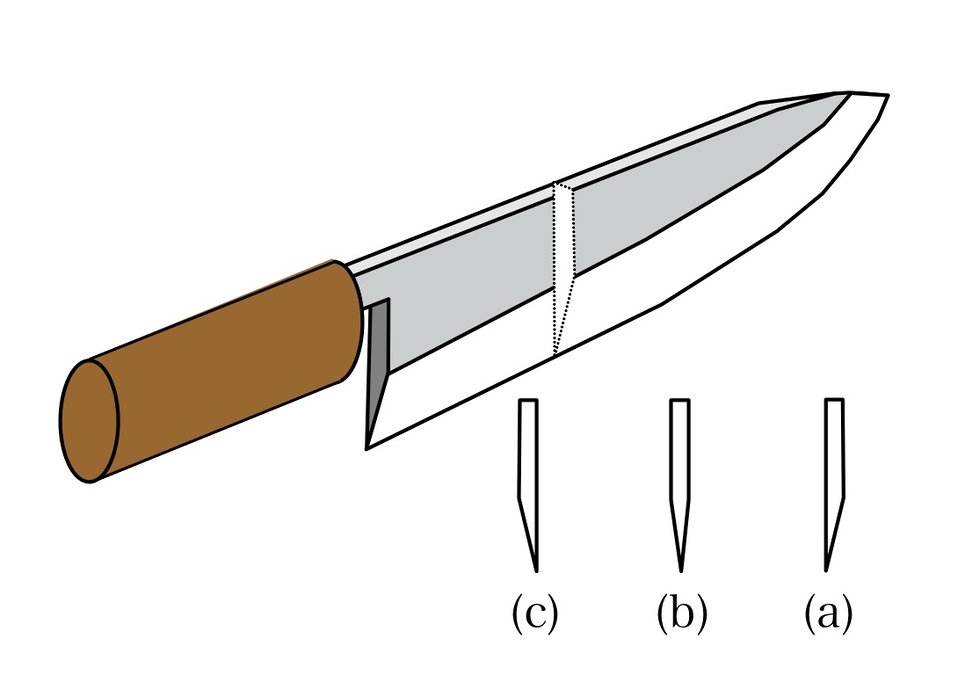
Three types of blade found on Japanese knives. (b) is angled on both sides, (a) and (c) only on one side, where (a) is for right hand use and (c) is for left hand use.